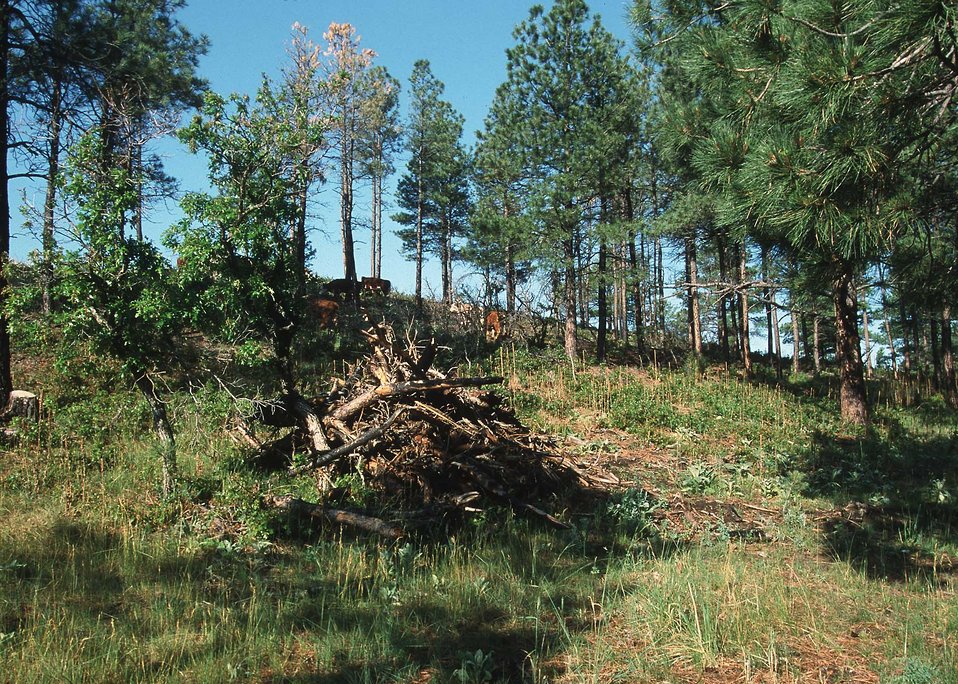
Understory after Hydroax treatment.